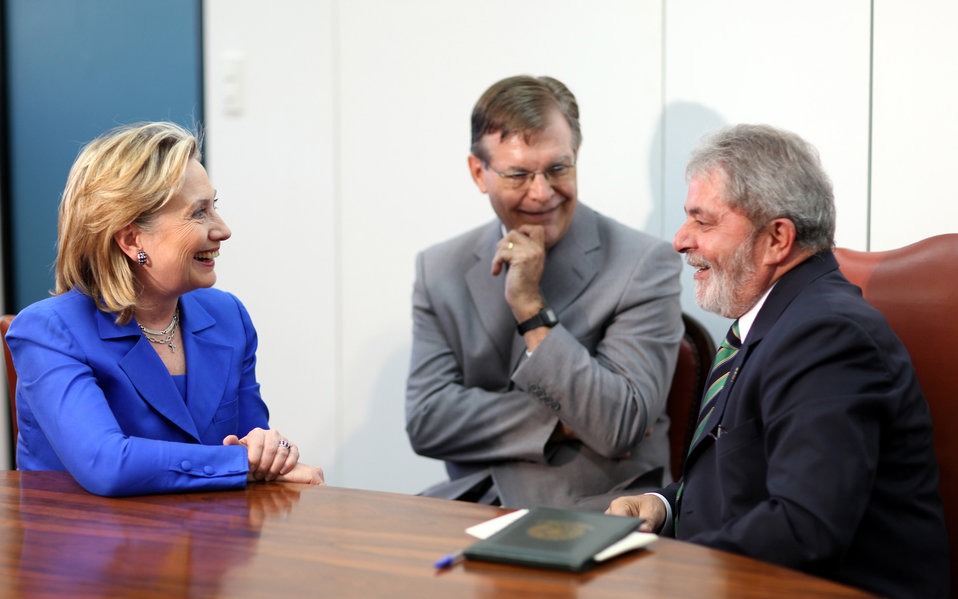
Secretary Clinton With President Lula

U.S. Secretary of State Hillary Rodham Clinton meets with President Lula in Brasília, Brazil March 3, 2010.